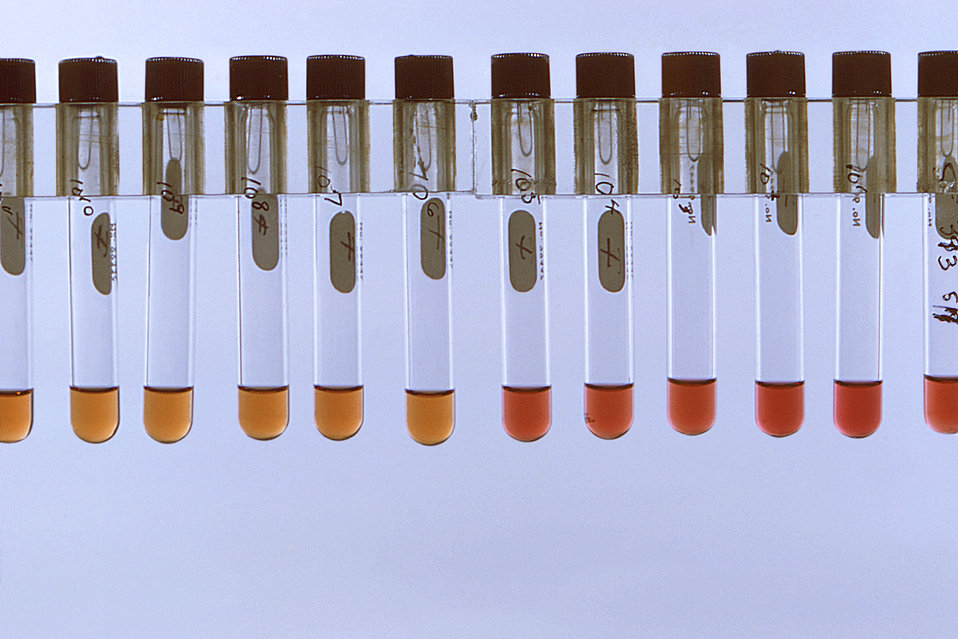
These are Mycoplasma broth tubes containing Mycoplasma hominis broth showing color changes.